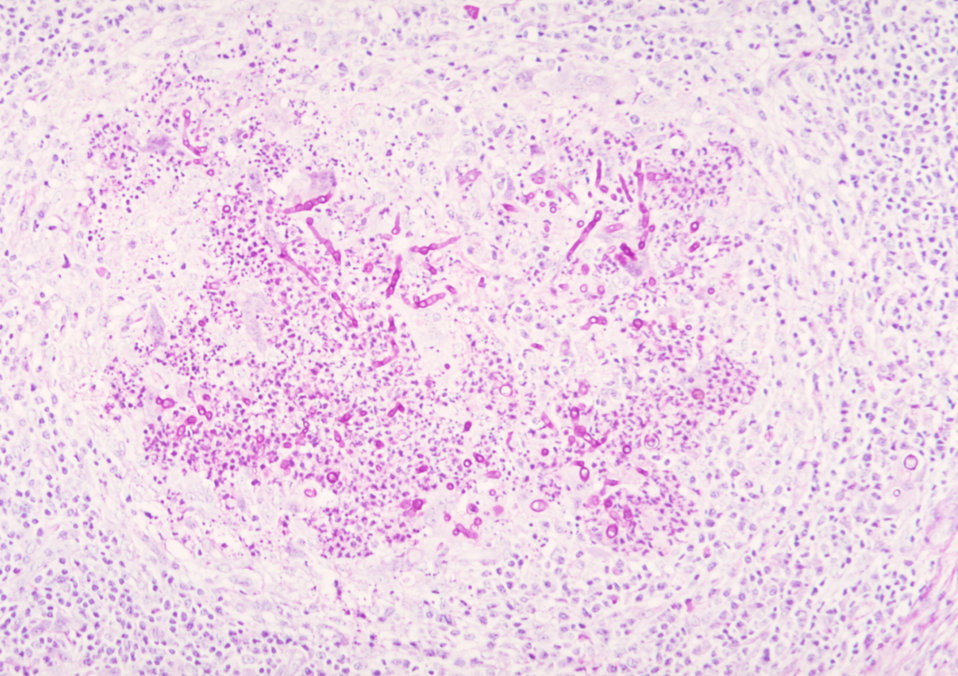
This was a case of phaeohyphomycosis of subcutaneous tissue due to the fungus Curvularia harveyi.